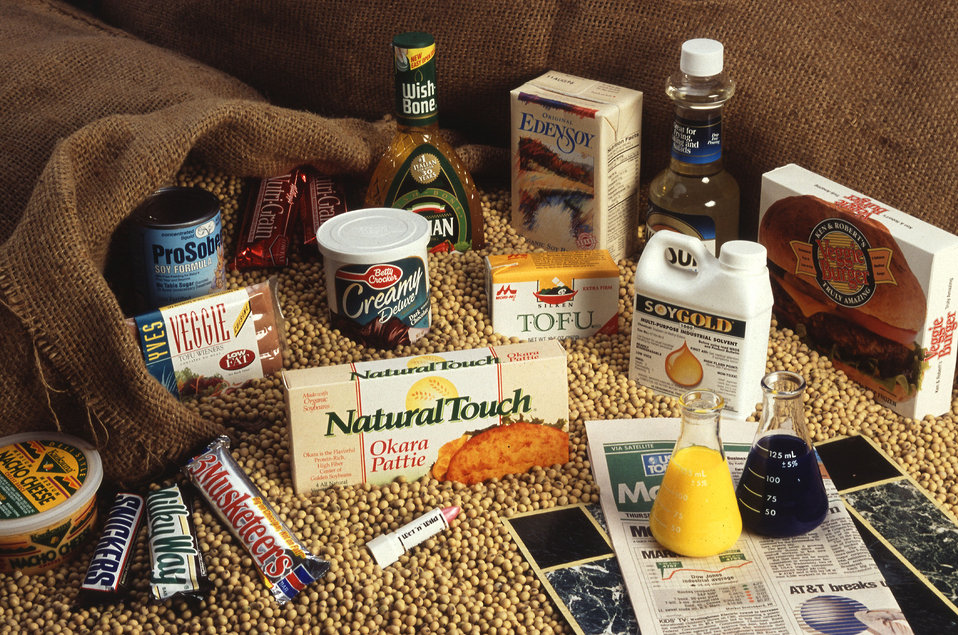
Soybeans have found their way into a variety of foods such as soymilk is used in infant formulas, Oriental tofu (soybean curd) made by coagulating soy milk, soy yogurt, soy burgers, soy loaf, soy sausage, and soy oil is the most widely used edible oil in the U.S. used in mayonnaise, salad dressing, process cheese products, dessert frostings, and much more. Thanks to research by the U.S. Department of Agriculture (USDA) Agricultural Research Service (ARS) soybeans have been incorporated into a host of nonfood products. These range from your morning newspaper printed with so oil-based ink to lipstick, plastics. flooring, paints, and stain-removing cleaners. At one USDA ARS lab scientists are cloning soy's genes for proteins, with an eye to improving its nutritional quality. At another lab USDA ARS is trying to learn how stress factors such as drought and heat affect the plant's ability to flower. (Fewer flowers mean fewer beans)